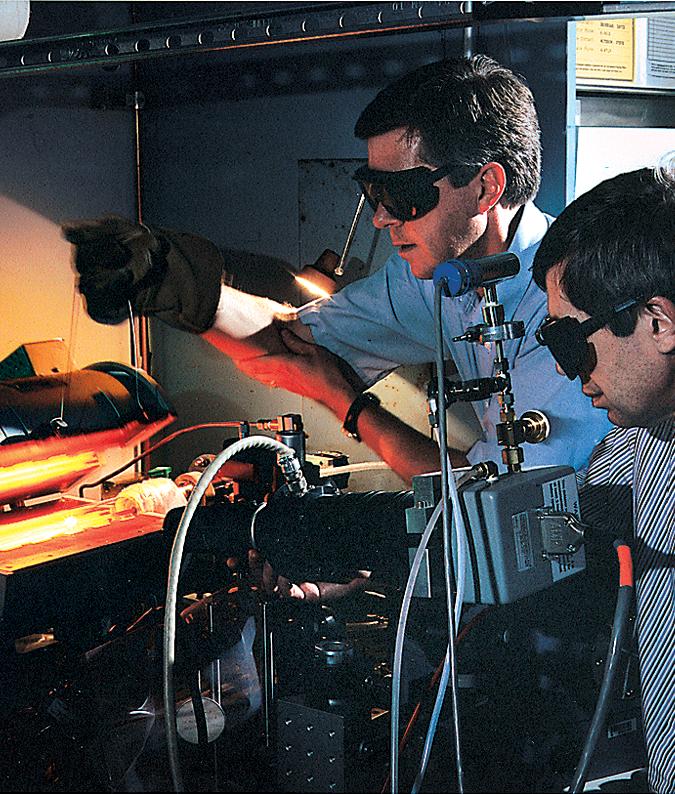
ORNL RESEARCHERS USE LASER ABLATION TO FORM CARBON NANOTUBES FOR POTENTIAL USE IN IMPROVING ELECTRONIC DEVICES.

RESEARCHERS AT ORNL ARE EXPLORING METHODS TO PRODUCE CARBON NANOTUBES, ALIGN THEM, AND ENABLE THEM TO BIND WITH MATRIX MATERIALS TO CREATE AN ULTRA-LIGHTWEIGHT COMPOSITE WITH UNUSUAL STRENGTH.